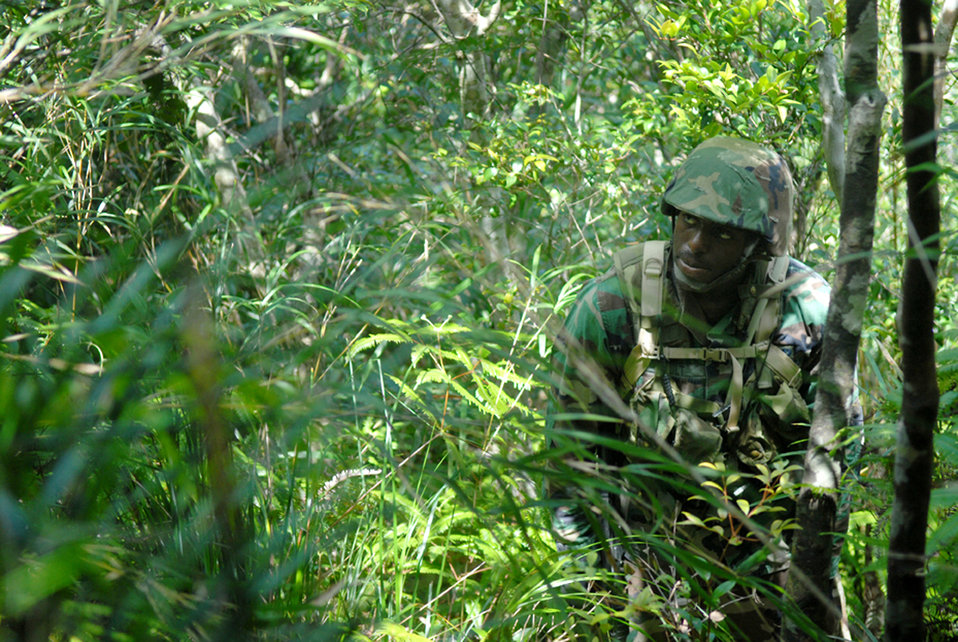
Jungle warfare training

Airman 1st Class Scott Vault finds out just how thick jungles are firsthand during his first navigation mission at the Jungle Warfare Training Center at Camp Gonsalves, Okinawa, on July 25. Thirty Airmen from the 18th Communications Squadron at Kadena Air Base, Japan, attended the weeklong course, which included land navigation and other skills, culminating in an endurance course on the final day. The 18th CS is the first non-combat support unit to go through this training.